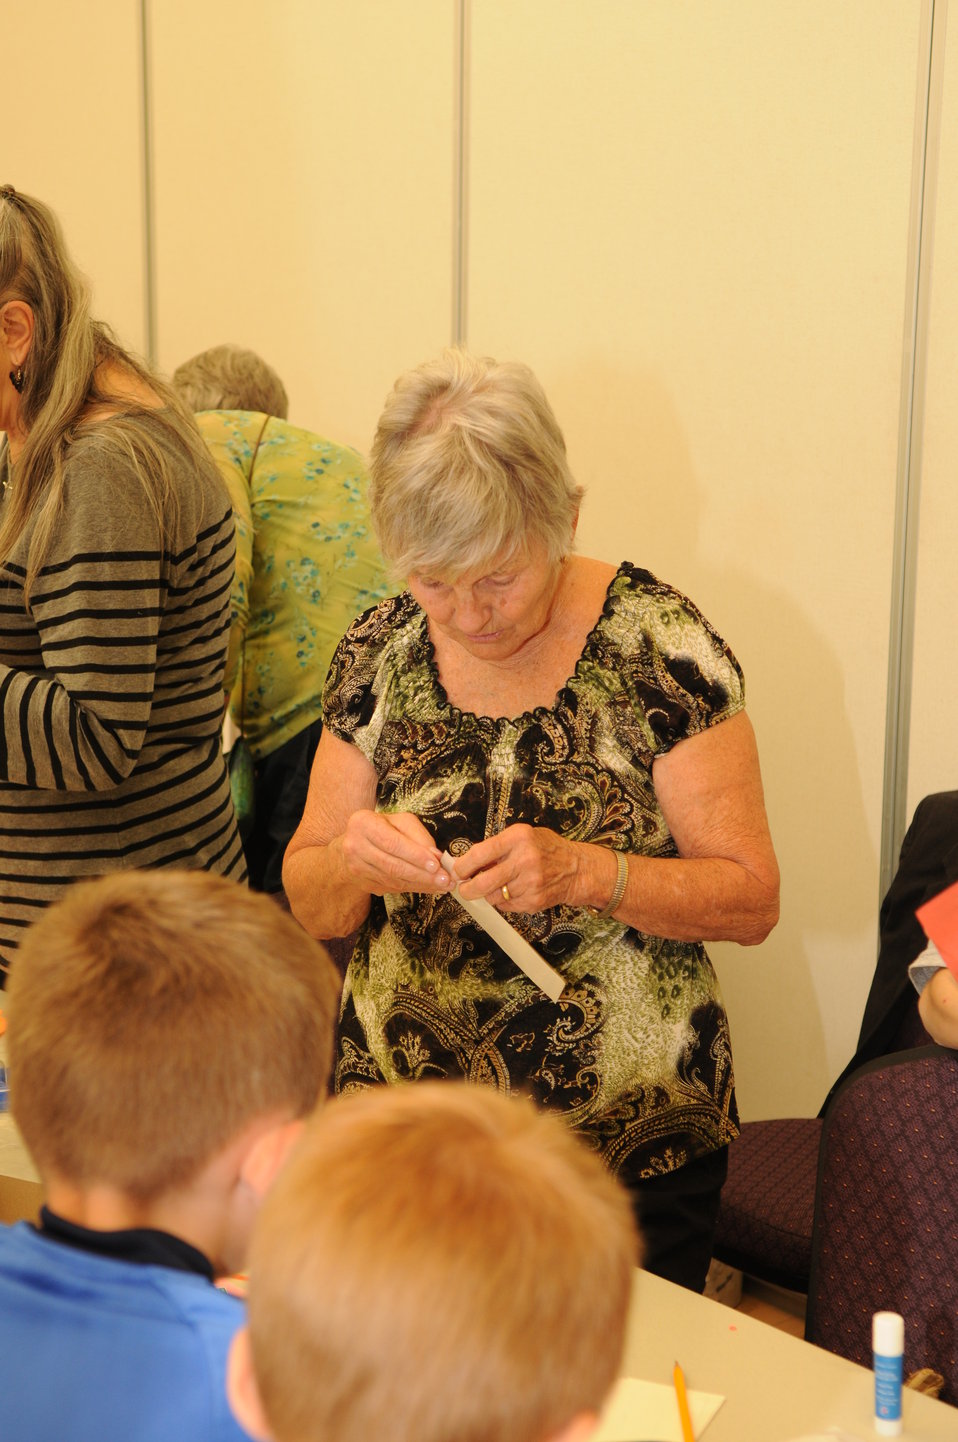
Youth Outreach

The U.S. Fish & Wildlife Service sponsored the 2012 Federal Duck Stamp Art Contest September 28 and 29 in Ogden, Utah, at Weber State University. A panel of five judges was responsible for choosing the art work used to design the 2013-2014 Migratory Bird Hunting and Conservation Stamp.